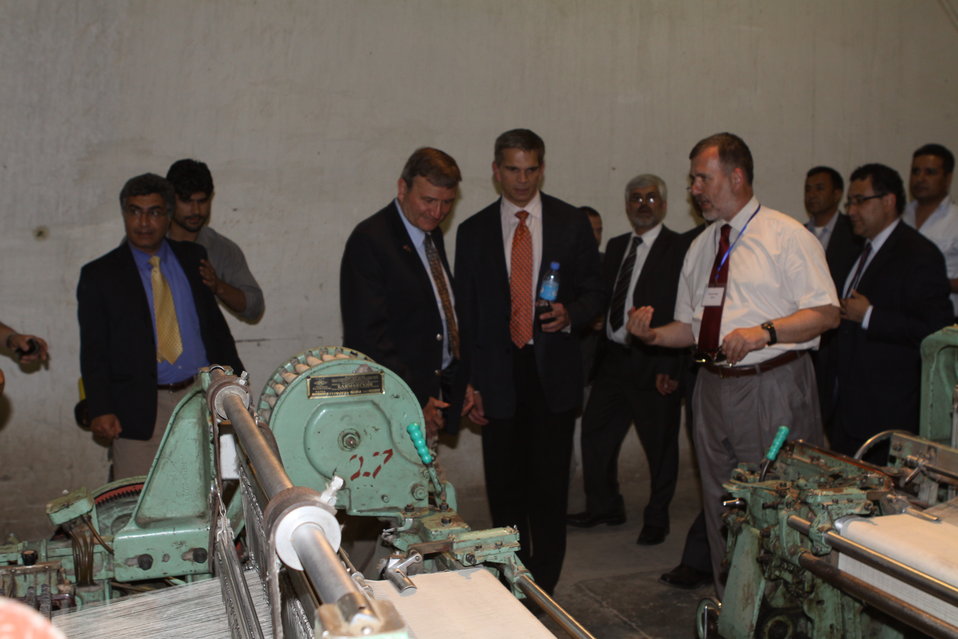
100525 Hirat Textile Company 757